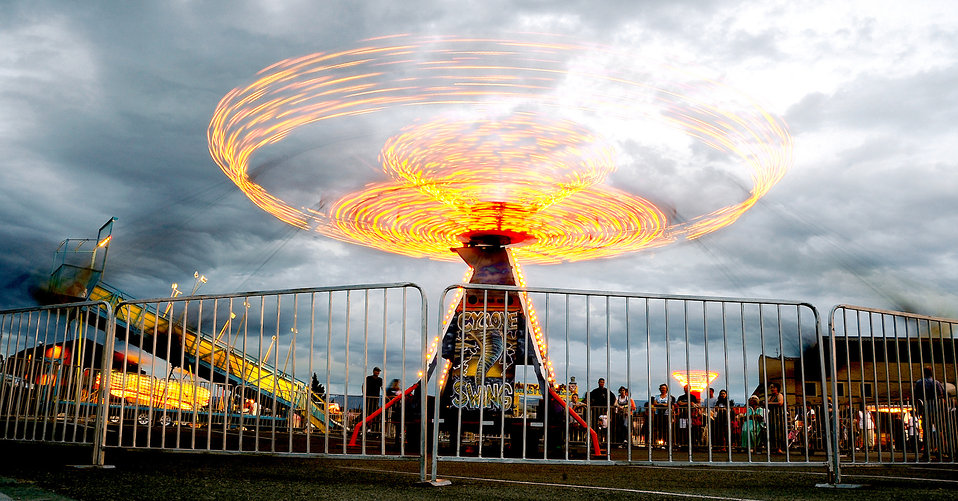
Fireworks light up the night...

Carnival ride lights spin during the Fourth of July celebration at Holloman Air Force Base, N.M. in 2009.